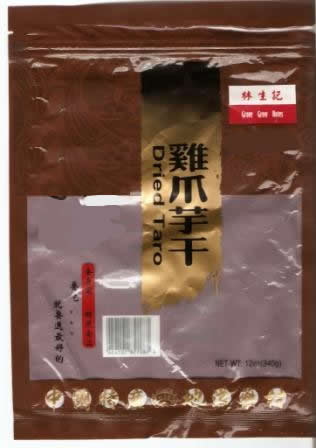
RECALLED - Grove Grow Notes Dried Taro

April 20, 2011 - Product Recall - S&M (USA) Enterprise Corp. Issues Alert on Undeclared Sulfites in Grove Grow Notes Dried Taro.